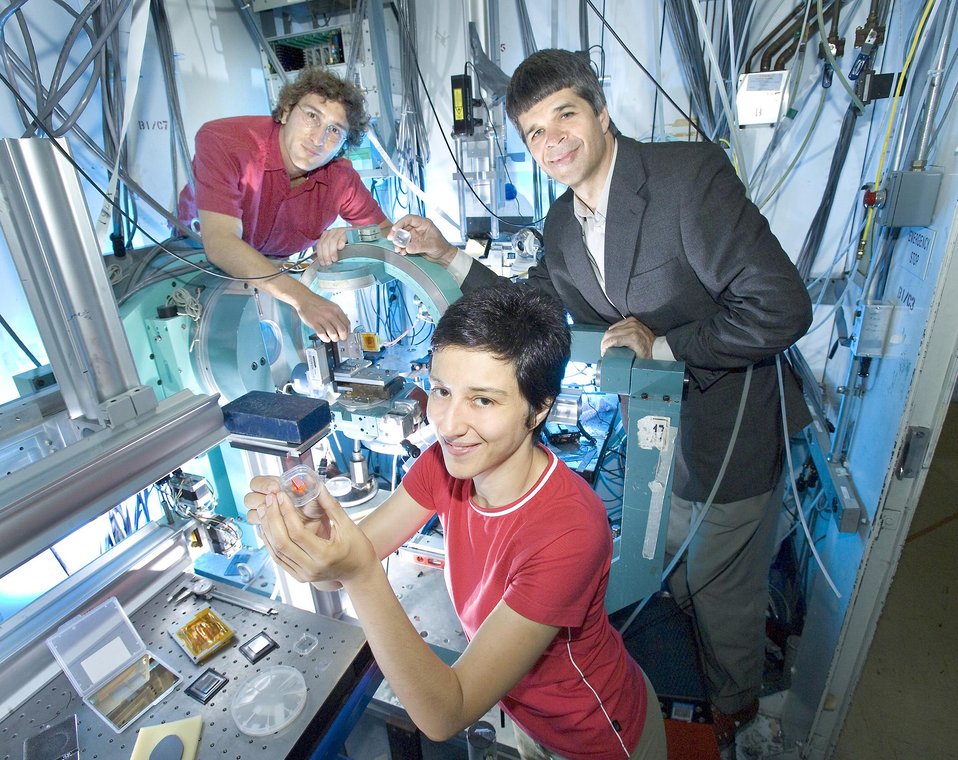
RESEARCHERS SHOW THEIR AWARD WINNING DETECTOR WON BY BNL, KANSAS STATE UNIVERSITY AND YINNEL TECH., INC.

BROOKHAVEN NATIONAL LABORATORY WON A 2005 R&D 100 AWARD FOR DEVELOPING A HIGHLY EFFICIENT, LOW-COST RADIATION DETECTOR. THE DETECTOR CAN RECOGNIZE X-RAYS AND GAMMA RAYS WITH HIGH RESOLUTION AND CAN IDENTIFY SPECIFIC SOURCE OF RADIATION. IT CAN BE USED FOR VARIOUS APPLICATIONS INCLUDING: HOMELAND SECURITY, NUCLEAR MEDICAL IMAGING, ENVIRONMENTAL MONITORING AND CLEANUP, GALACTIC STUDIES AND NUCLEAR WEAPONS SAFEGUARDS. THE AWARD IS GIVEN BY R&D MAGAZINE, THE INNOVATIONS THAT TRANSFORM BASIC SCIENCE INTO USEFUL PRODUCTS.